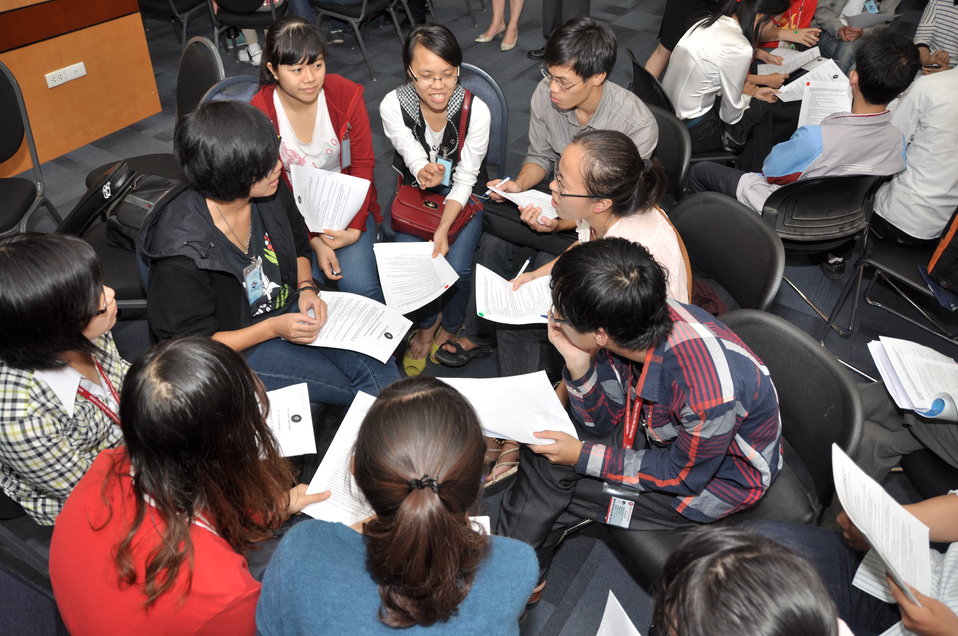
Vietnamese university students join the Business Plan Mashup exercise

Photo: @USAIDVietnam, November 16, 2012